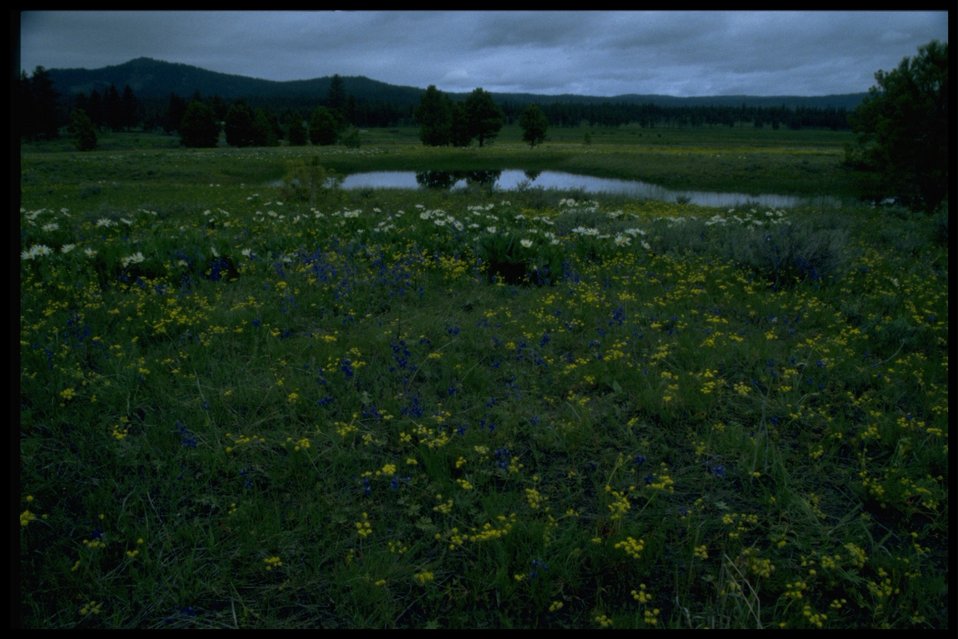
Prairie display of white-rayed mule's ears (Wyethia helianthoides) and slenderfruit lomatium (Lomatium leptocarpum).